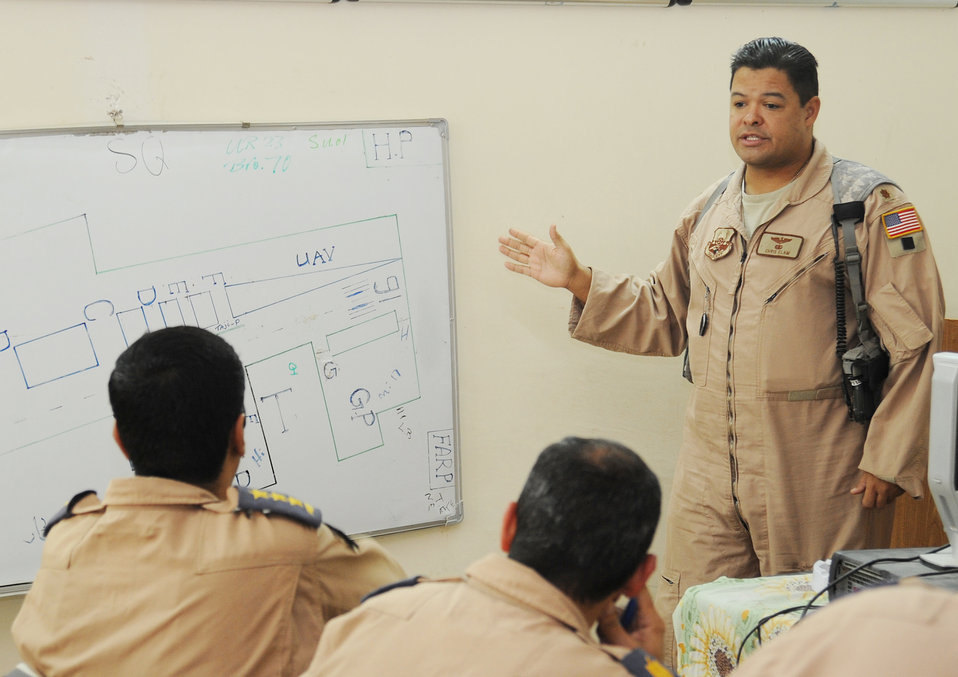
Airmen train, advise, assist Iraqi helicopter pilots

Maj. Jack Swinehart (right) observes an Iraqi pilot performing preflight procedures prior to a helicopter training mission Oct. 8, 2009, at Camp Taji, Iraq. The major sits side-by-side with Iraqi pilots as they practice approaches, takeoffs, landings and aerial maneuver formation flying procedures. U.S. Air Force instructor pilots assigned to the 721st AEAS train, advise and assist Iraqi helicopter pilots around the clock, helping the Iraqis develop their own air force. Major Swinehart is a 721st Air Expeditionary Advisory Squadron UH-1H pilot deployed from Fort Rucker, Ala.